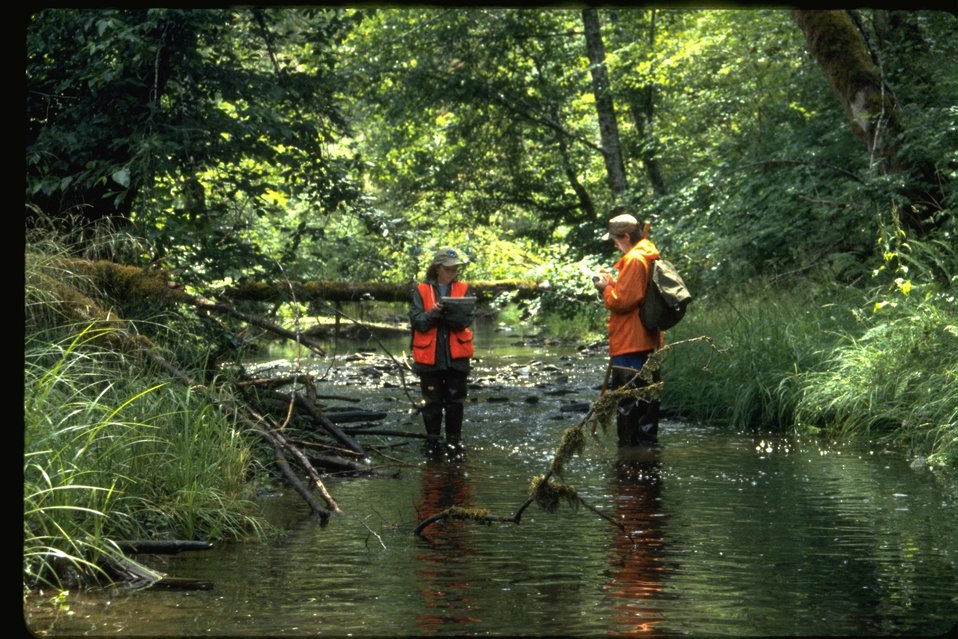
Sarah and Russ surveying Smith Creek during habitat study.